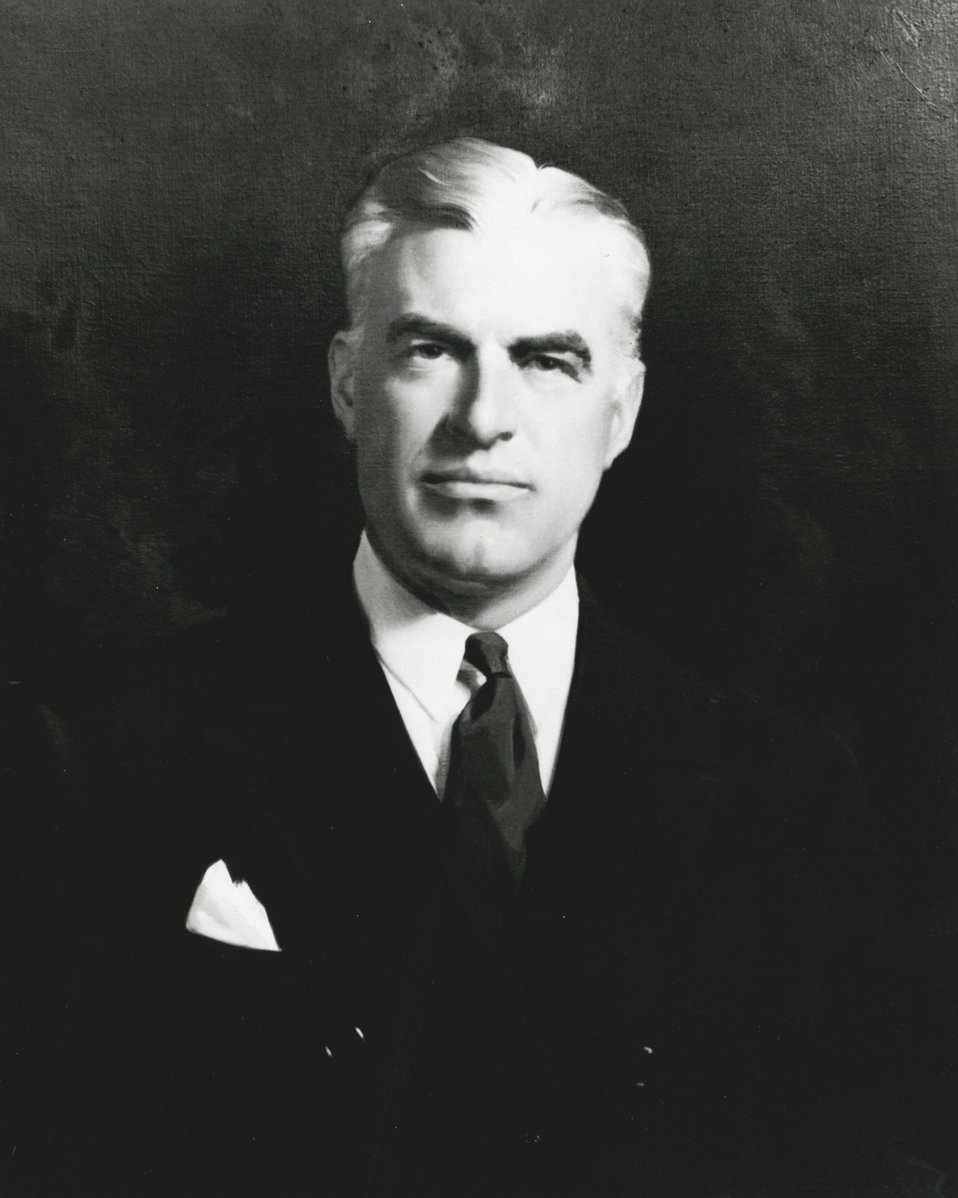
Edward R. Stettinius, Jr., U.S. Secretary of State, December 1, 1944 to June 27, 1945